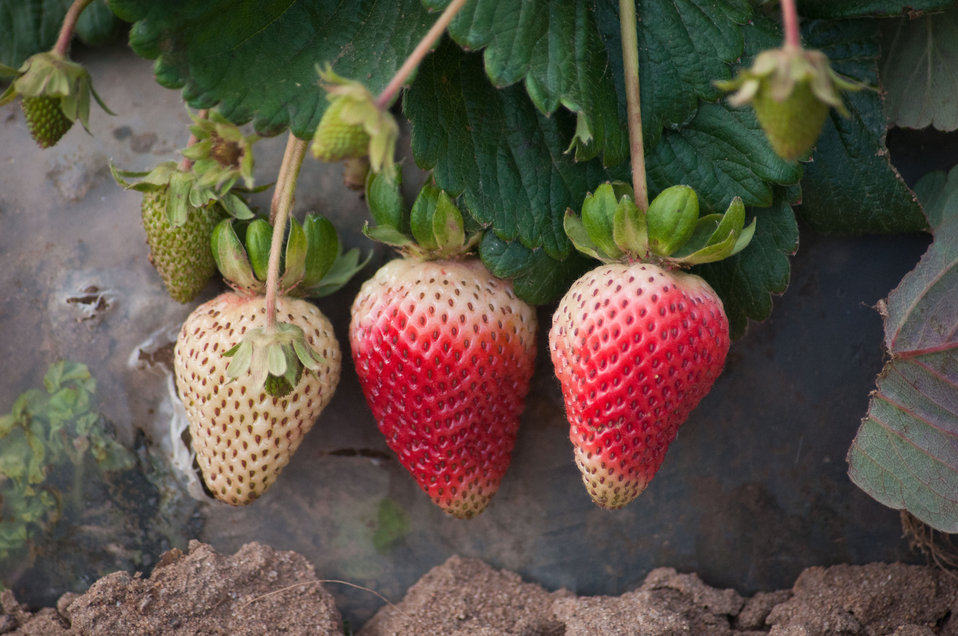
A strawberry farm near Castroville, CA, on Thursday, June 16, 2011.